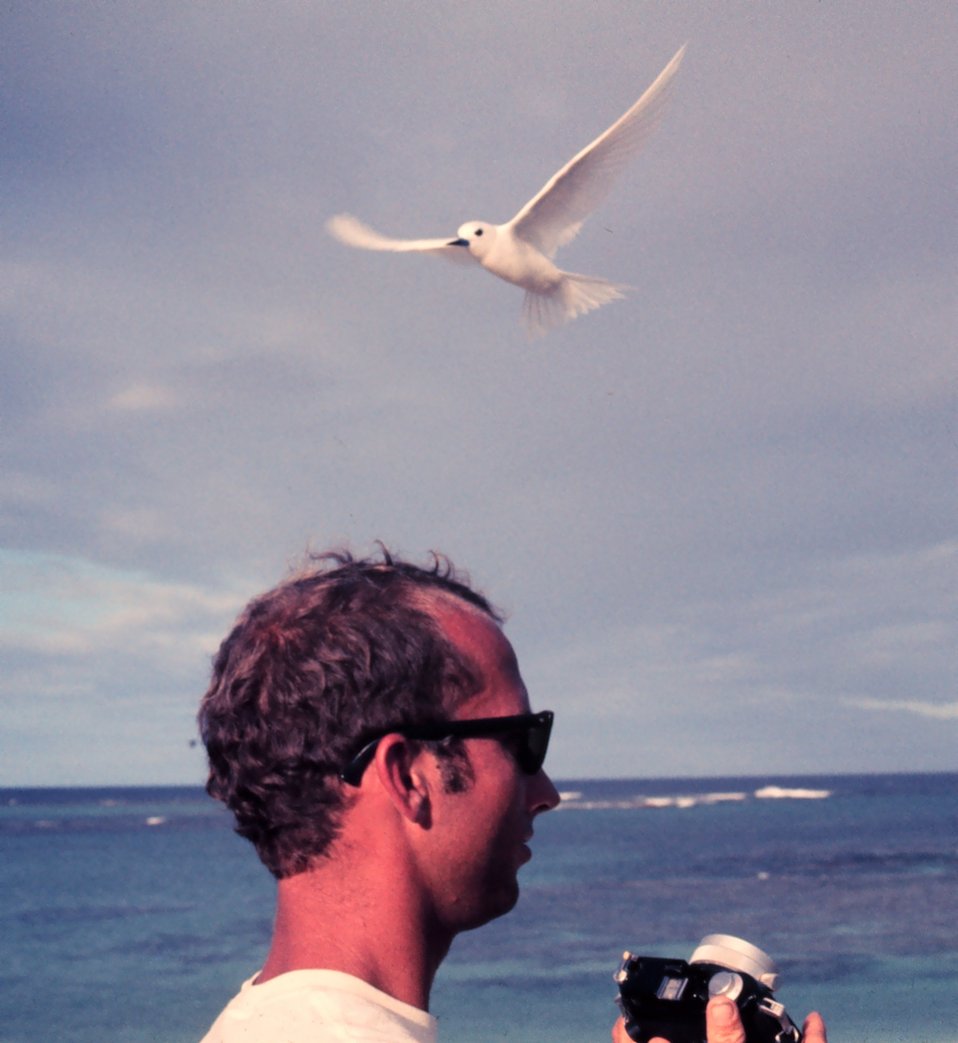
White terns or fairy terns, Gygis alba, in flight over the head of Jim McVey.